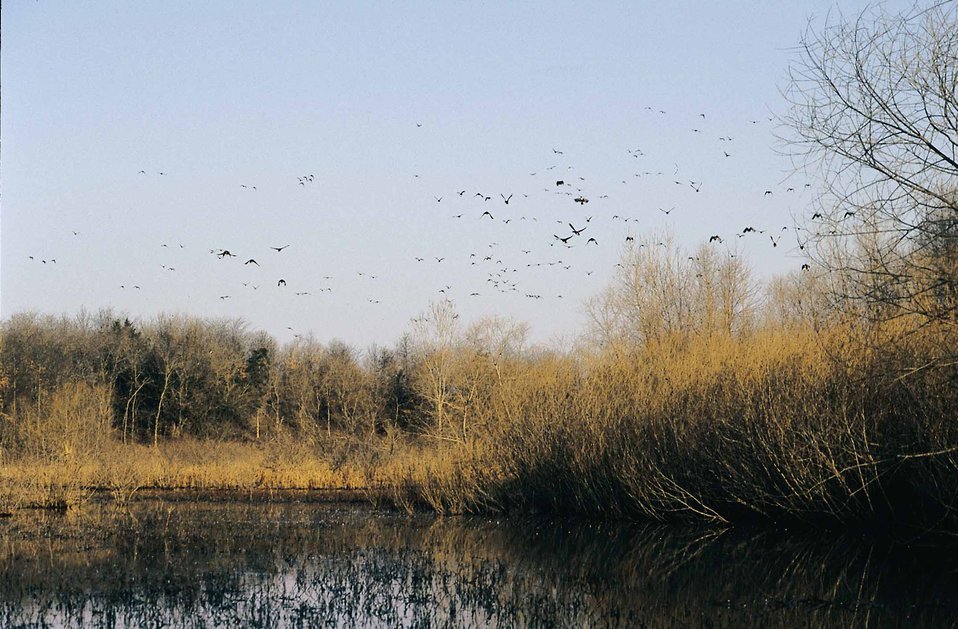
Habitat for ducks and geese on a restored wetland in Van Buren County, Iowa.